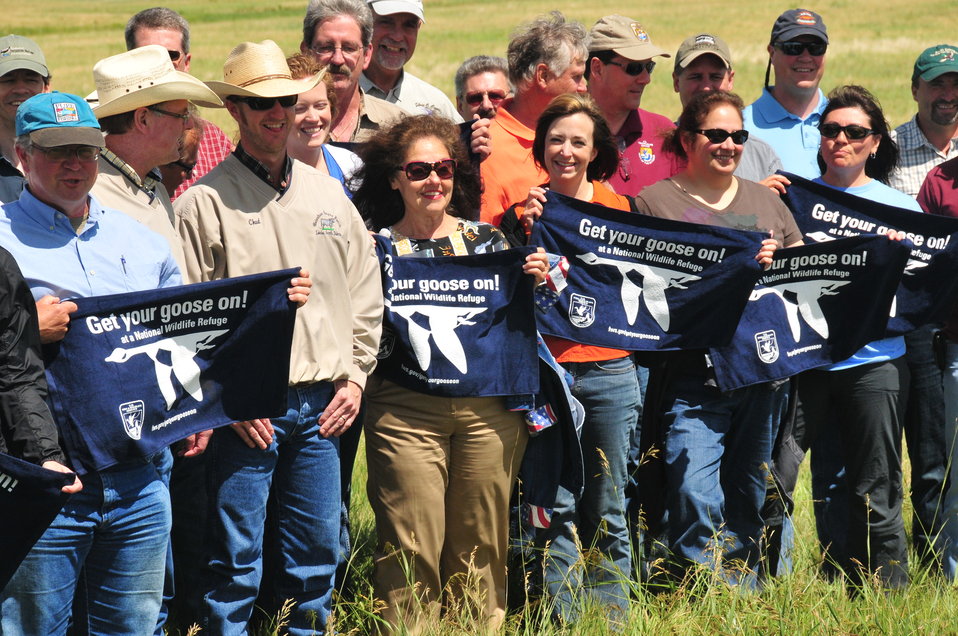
Get Your Goose On!

The national meeting for regional chiefs of the National Wildlife Refuge System is held three times a year in different locations around the country. This 2012 meeting took place in McPherson County, South Dakota, and focused on the Dakota Grassland Conservation Area.

This photo was taken on the Wade Weiszharr and Family Ranch, which contains perpetual U.S. Fish and Widlife grassland and wetland easements. This site is also located in the heart of Prairie Pothole Region, making it extremely productive migratory bird habitat and a great place to “Get your goose on!”

Here is a group shot taken on the Wade Weisszhauer Ranch!